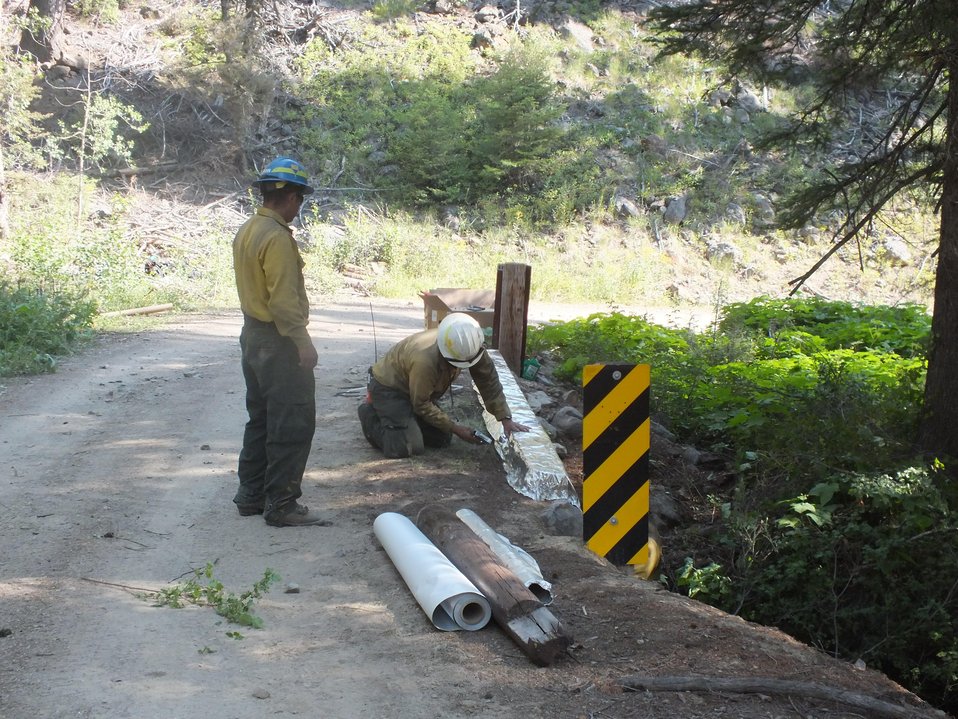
Firefighters wrap bridge in Aluminized Structure Wrap (cabin wrap) to protect the structure from radiant heat and burning embers at the Lodgepole Fire on Jul. 25, 2013. The Lodgepole Fire in the Salmon-Challis National Forest near Challis, ID began on Jul. 20, 2013 by lightning has consumed approximately 20,325 acres and is approximately 40% contained.